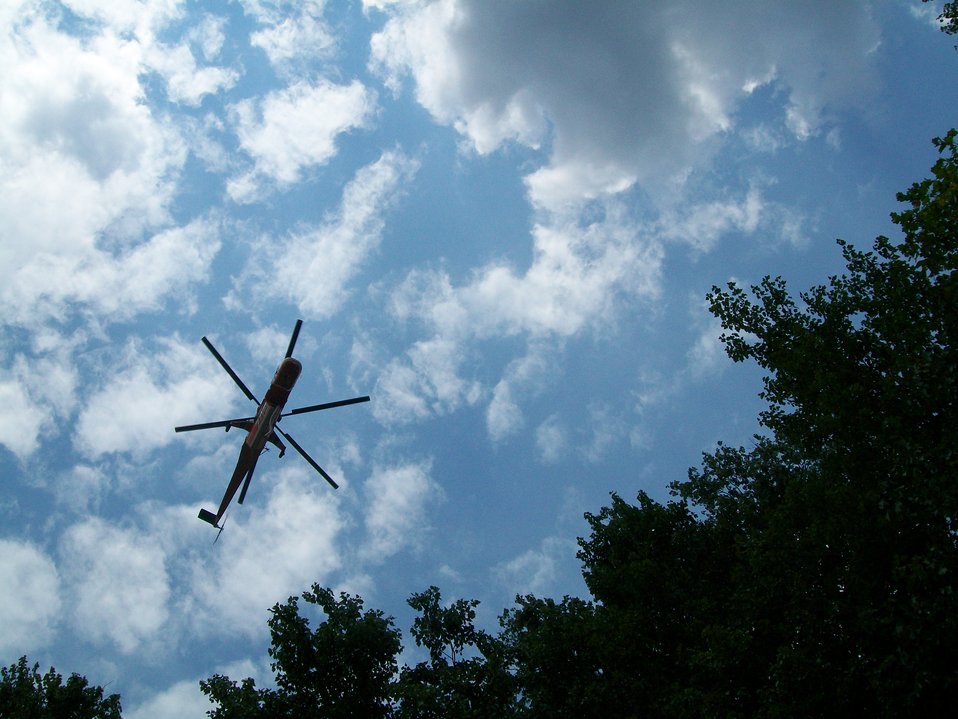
Asterix heli

Suffolk, VA, August 2011. From below, a large (Type 1) helicopter working the Lateral West Fire at Great Dismal Swamp National Wildlife Refuge looks like a star against a cloudy sky.